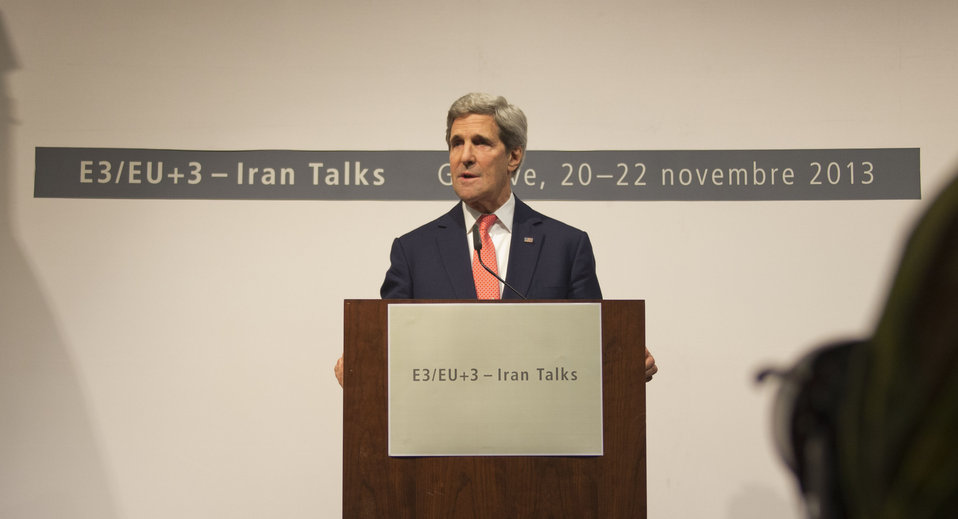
Secretary Kerry Speaks to the Media in Geneva, Switzerland

U.S. Secretary of State John Kerry addresses reporters and takes some of their questions during a news conference in Geneva, Switzerland, on November 24, 2013, after the P5 1 member nations concluded negotiations with Iran about its nuclear capabilities.